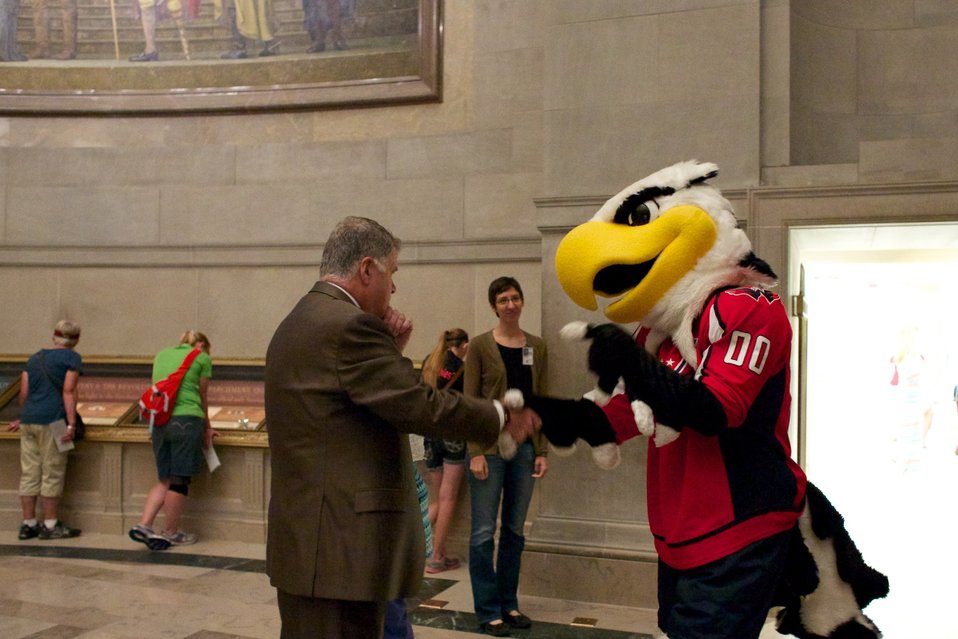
Washington Capitals mascot Slapshot visits the National Archives